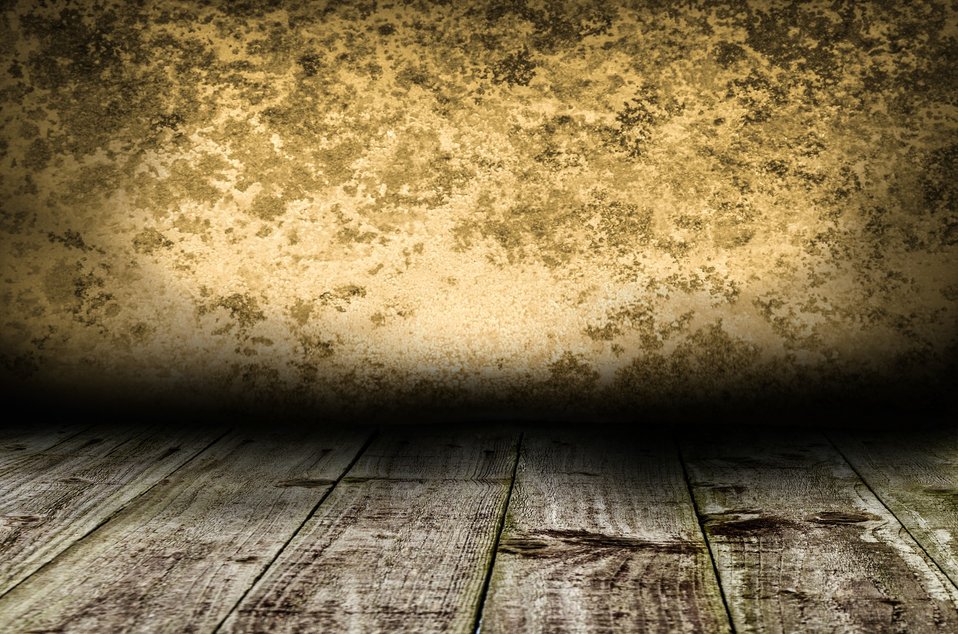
Wooden floor and old wall background.